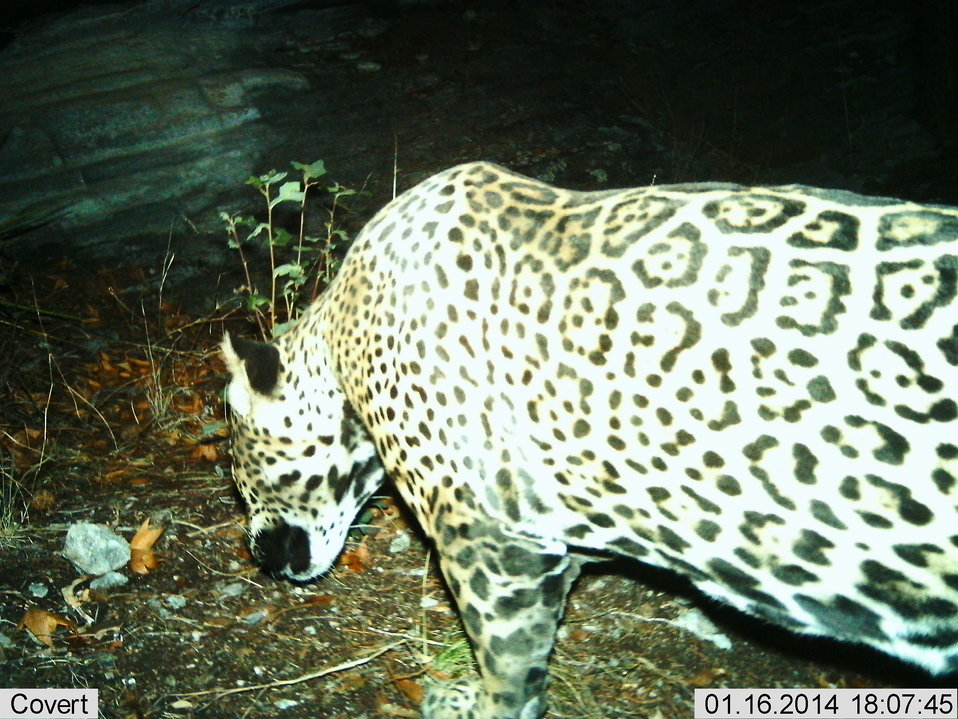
Male Jaguar

UA Jaguar 2014-01-16 (18.07).jpg] Male jaguar photographed by automatic wildlife cameras in the Santa Rita Mountains on January 16, 2014, as part of a U.S. Fish and Wildlife Service/Department of Homeland Security-funded jaguar survey conducted by University of Arizona. The jaguar has been photographed previously at this location.